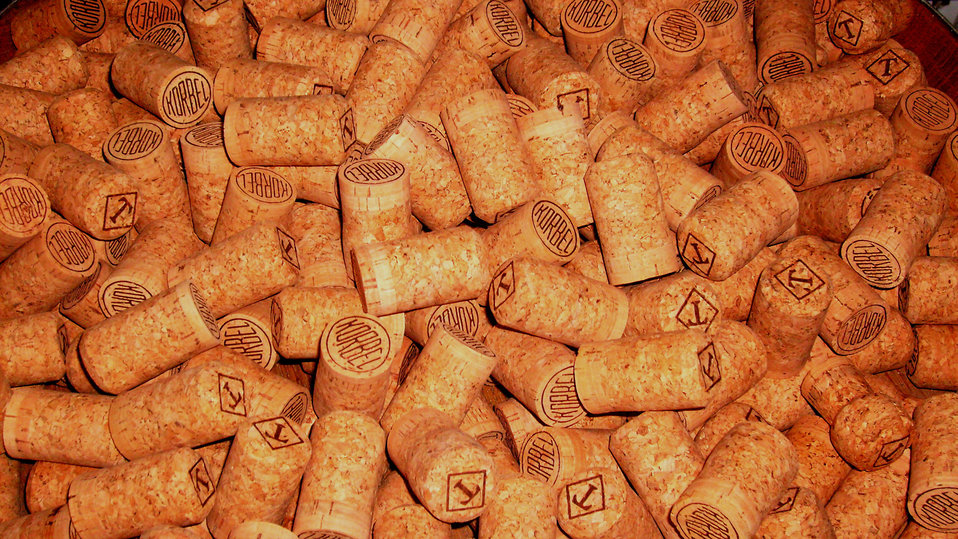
Cheers !

Champagne corks at the korbel champagne cellars, guerneville, ca, usa.